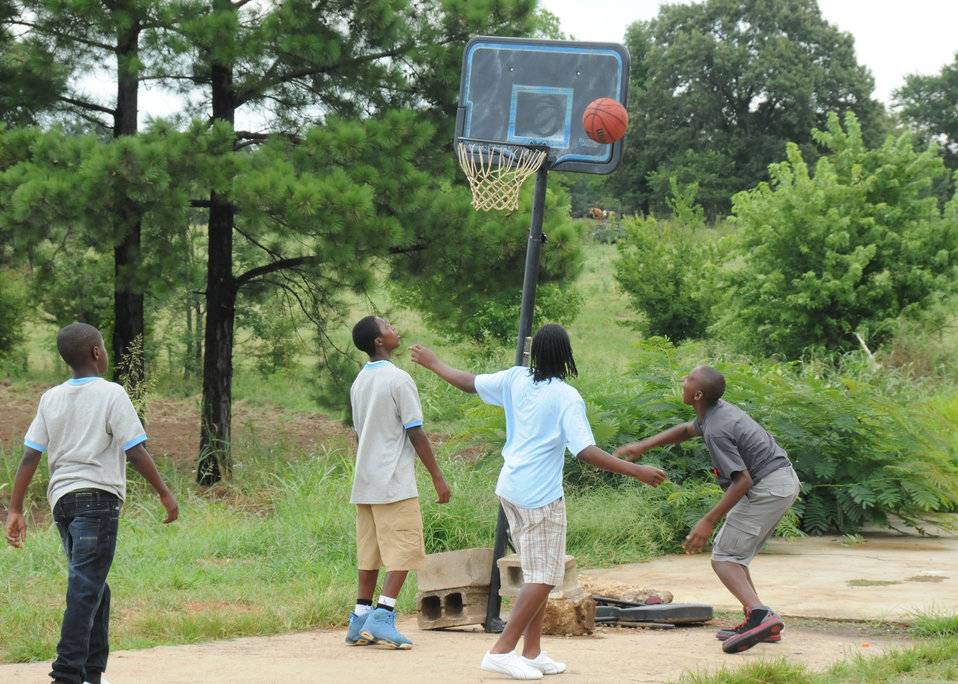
Playing basketball near their new home in Fort Coffee, Oklahoma. (L to R) Knighe Rhoder, Mark Carter, Carleigha Thompson, and Harous Davis.